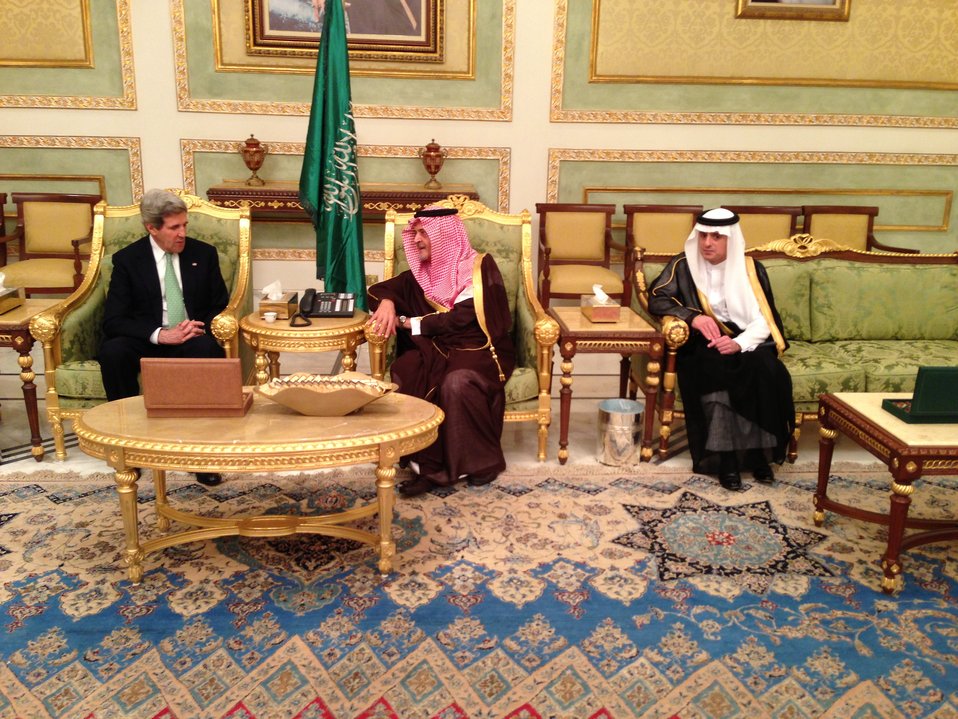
Secretary Kerry Meets With Saudi Foreign Minister Saud Al-Faisal and Ambassador al-Jubeir

U.S. Secretary of State John Kerry meets with Saudi Arabian Foreign Minister Saud Al-Faisal and Saudi Arabian Ambassador to the U.S. Adel al-Jubeir in Riyadh, Saudi Arabia, on March 3, 2013.